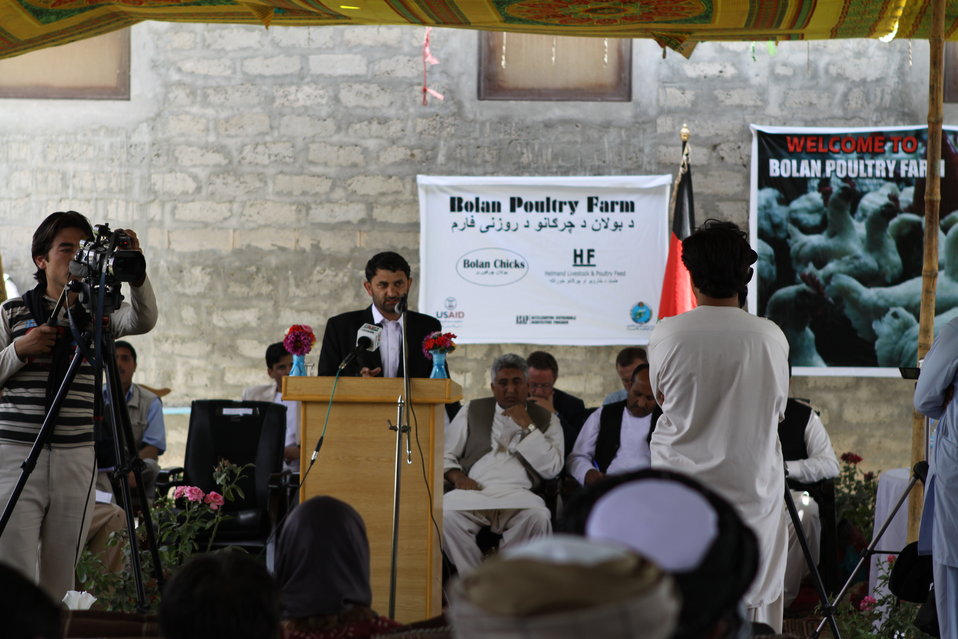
Bolan Poultry Farm